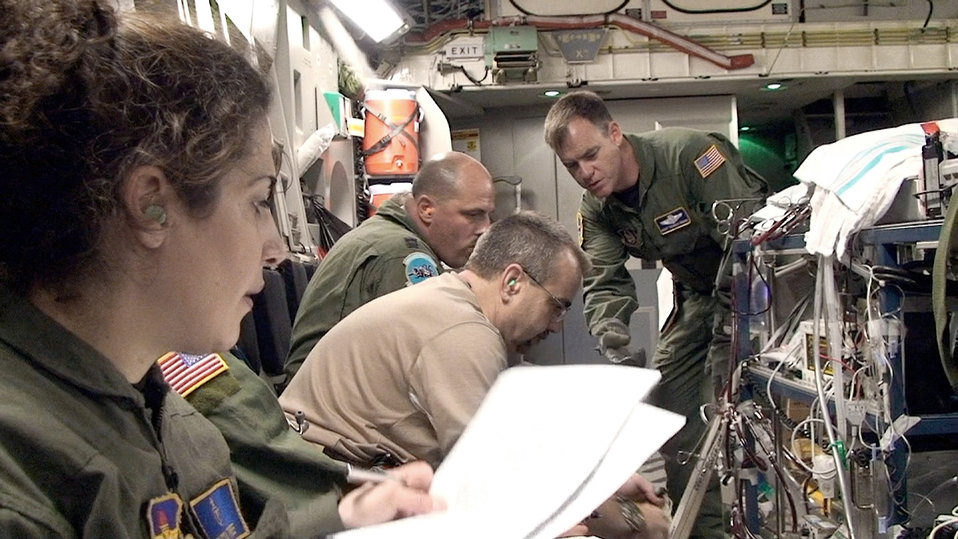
Joint-service, civilian ECMO team

An extra corporeal membrane oxygenation team from Lackland Air Force Base, Texas, cares for a critically ill infant on-board a C-17 Globemaster III en route to California, July 2010. The ECMO team included (left to right) then Maj. (Dr.) Melissa Tyree, from the 59th Maternal/Child Care Squadron; George Brandon, a pediatric intensive care unit nurse; Capt. Terry Bailey, a nurse from the 59th Medical Inpatient Squadron; and Master Sgt. Thomas Kamin, from the Air Force Reserve Command 349th Aeromedical Evacuation Squadron.